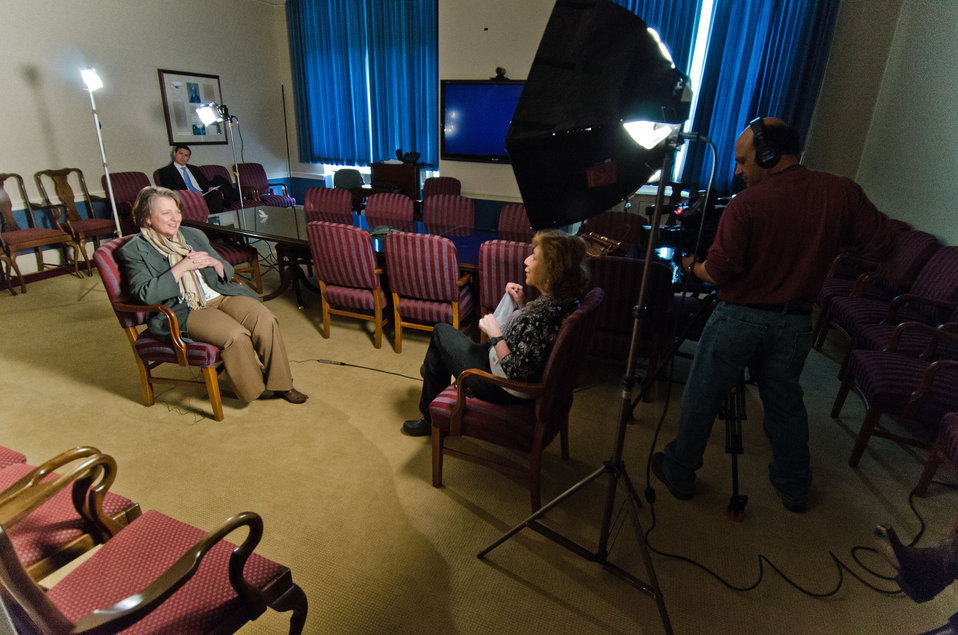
Deputy Agriculture Secretary Dr. Kathleen Merrigan (left) is interviewed by Shelia Conlin (right) a producer with NBC News Channel at the United States Department of Agriculture in Washington, D.C., on Monday, April 23, 2012. Dr. Merrigan discussed the farm incubator program for beginning farmers in ranchers. USDA is trying to improve its programs to meet its goal of helping 100,000 new farmers and ranchers launch viable businesses. The last federal farm bill included grants to help universities, nonprofits and community organizations develop farmer-training programs. It also offered new farmers a leg up in competitive federal conservation and grant programs, created financial incentives for landowners to lease them land, and established more favorable loan terms for them.